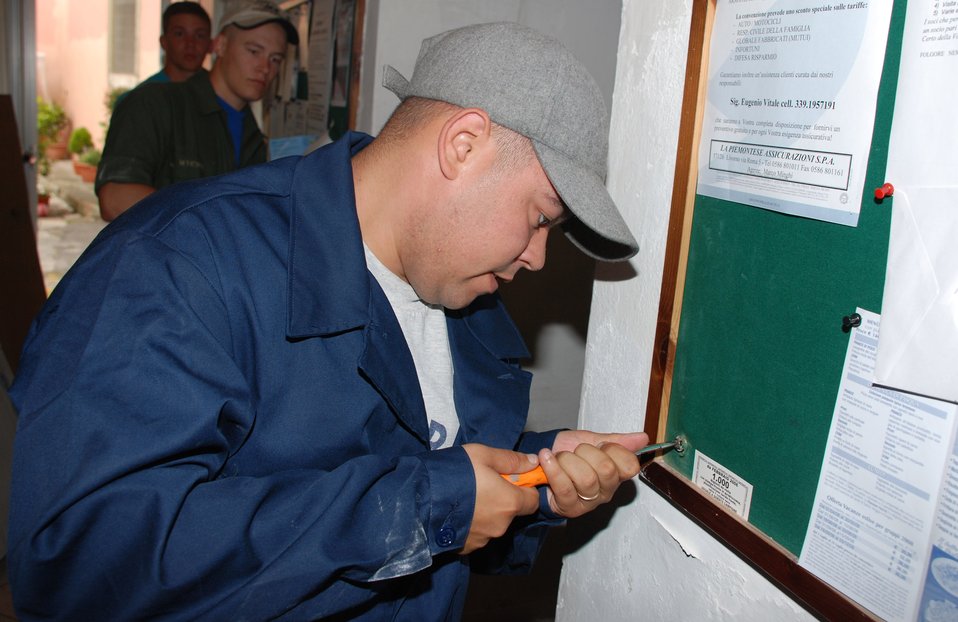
Camp Darby Airmen help Italian veterans

Staff Sgt. Ivan Vallejo prepares to remove a bulletin board during a volunteer effort to refurbish an Italian veterans hall in Livorno, Italy. Sergeant Vallejo is with the 31st Munitions Squadron at nearby Camp Darby.